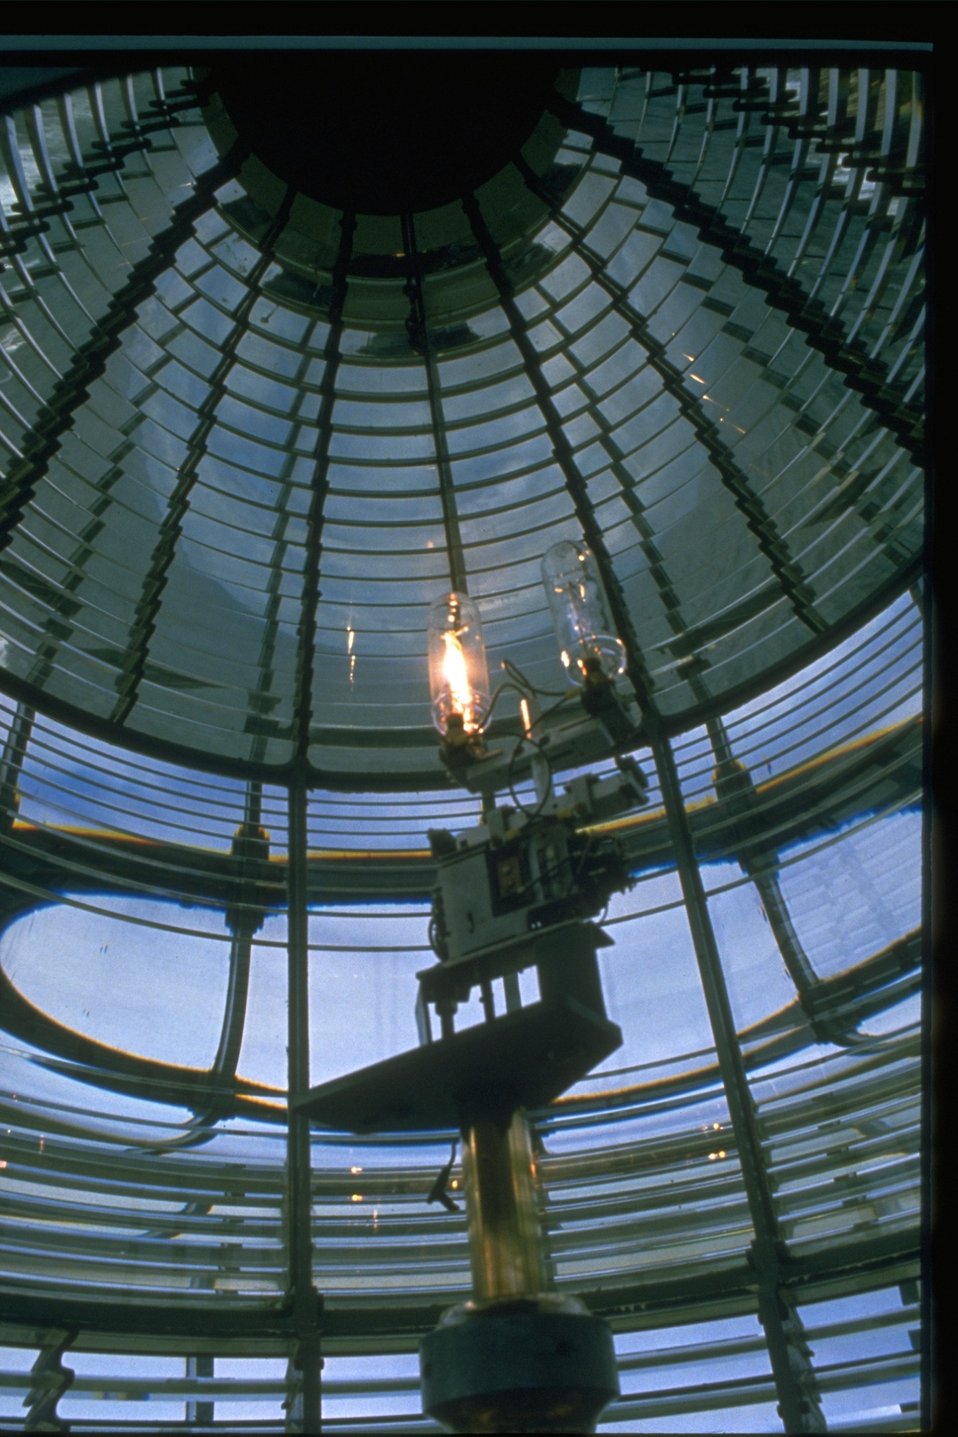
The light bulb (1000 watt lens) on the interior of the Yaquina Head lighthouse.